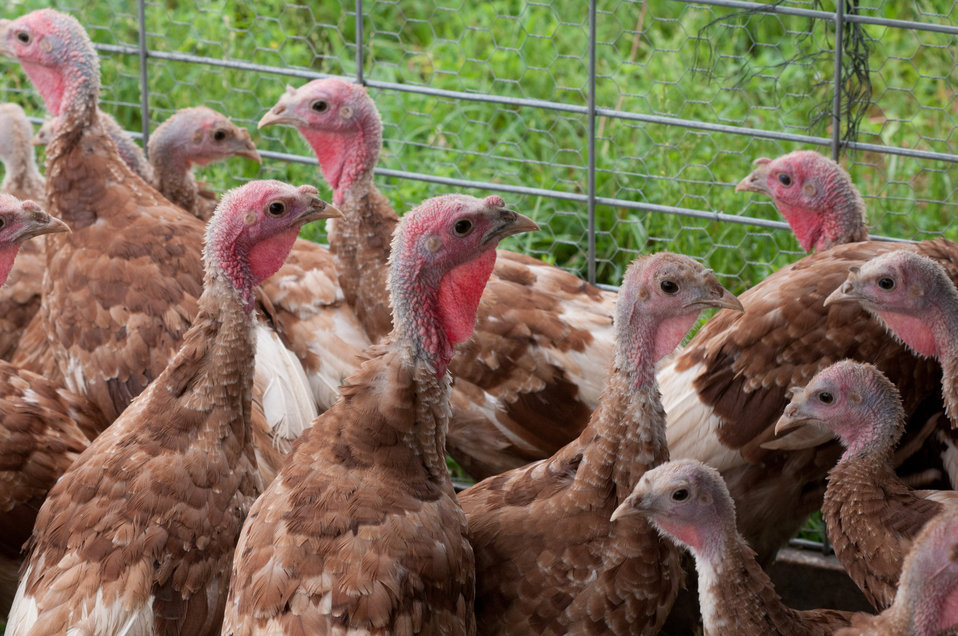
Broiler turkeys graze on organic pastures and live in pens that protect them from predators, direct sun light, and wind at Nick’s Organic Farm, owned by Nick Maravell in Adamstown, MD on Friday, July 12, 2013. The enclosures are light enough to be moved by hand, each day, one consecutive section at a time. This allows the pasture to easily recover from the grazing. The farm produces Black Angus beef, chicken, turkey, eggs, hay, soybeans, corn, alfalfa, orchard grass, rye; and other crops. The cattle are100% grass-fed receiving certified organic pasture, certified organic hay (in winter), water and mineral salts mixed with sea kelp. The cattle are not fed hormones, antibiotics or animal products. Poultry feed from grain is ground from organic grain. The poultry also graze on organic pastures. The farm has conducted on-farm research with federal, state and non-profit agencies to refine organic practices. An organization such as the U.S. Department of Agriculture (USDA) Agricultural Research Service (ARS) center in Beltsville has been able to conduct research to improve organic crops and to breed and manage the cattle so that they have.